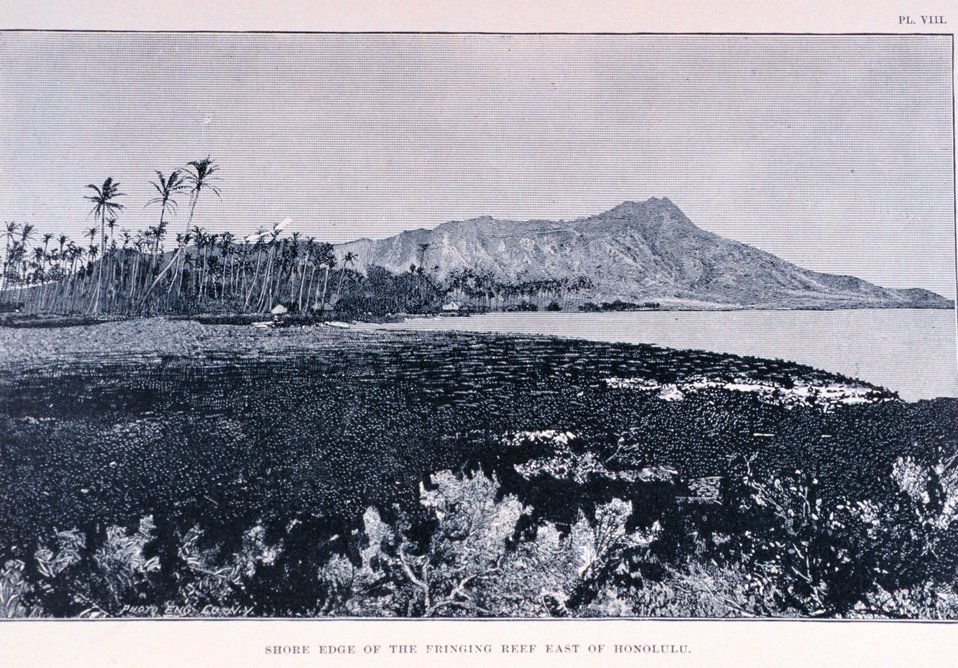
'Shore Edge of the Fringing Reef East of Honolulu', Plate VIII. In: 'Coral Reefs of the Hawaiian Islands' by Alexander Agassiz. April 1889. Bulletin of the Museum of Comparative Zoology, at Harvard College. Vol. XVII. No. 3. Library Call Number G161 A26.